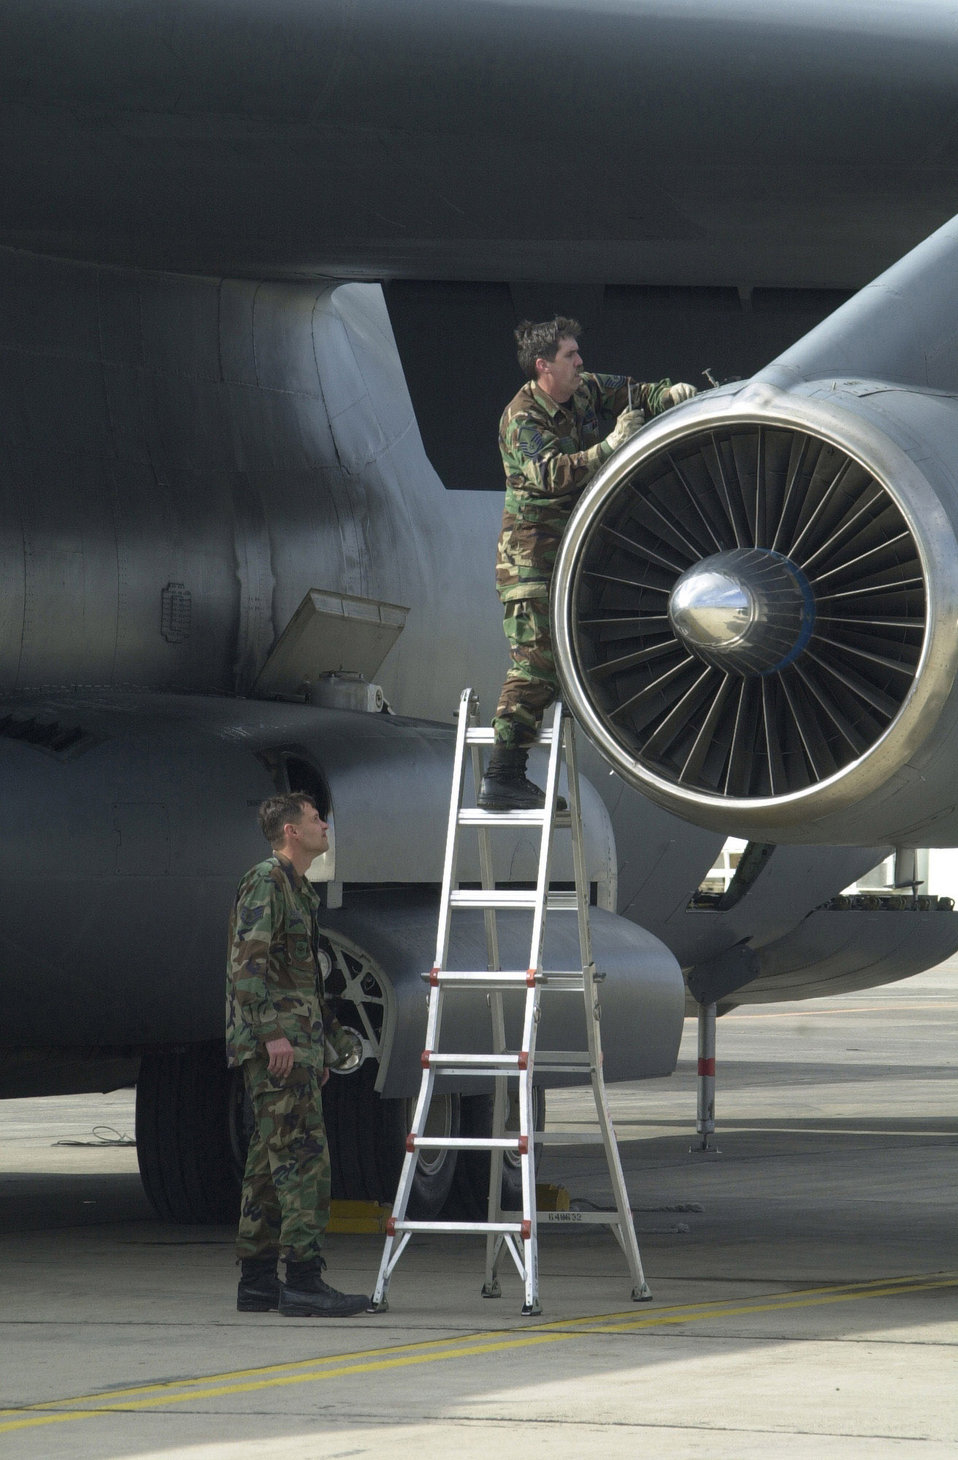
Starlifter check

OPERATION ENDURING FREEDOM -- Mississippi Air National Guardsmen Staff Sgt. Mitchell Sojourner (left) from the 72nd Aircraft Generation Squadron, and Master Sgt. John Carter from the 72nd Maintenance Squadron in Jackson, Miss., complete post-flight engine checks on a C-141B Starlifter at an operating location in support of Operation Enduring Freedom. The Starlifter fulfills the vast spectrum of airlift requirements through its ability to airlift combat forces and their equipment and drop them via air or land drop.